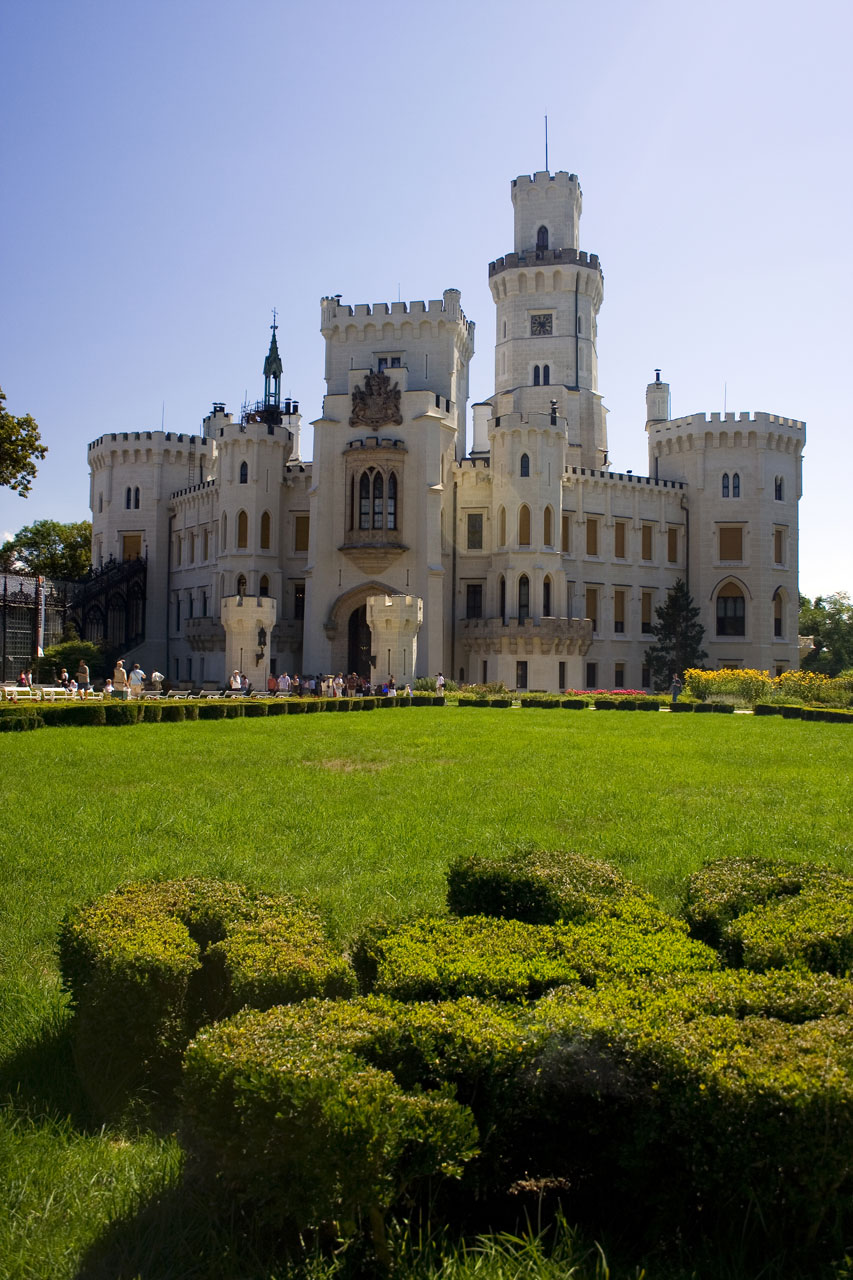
Hluboka castle in south of bohemia.